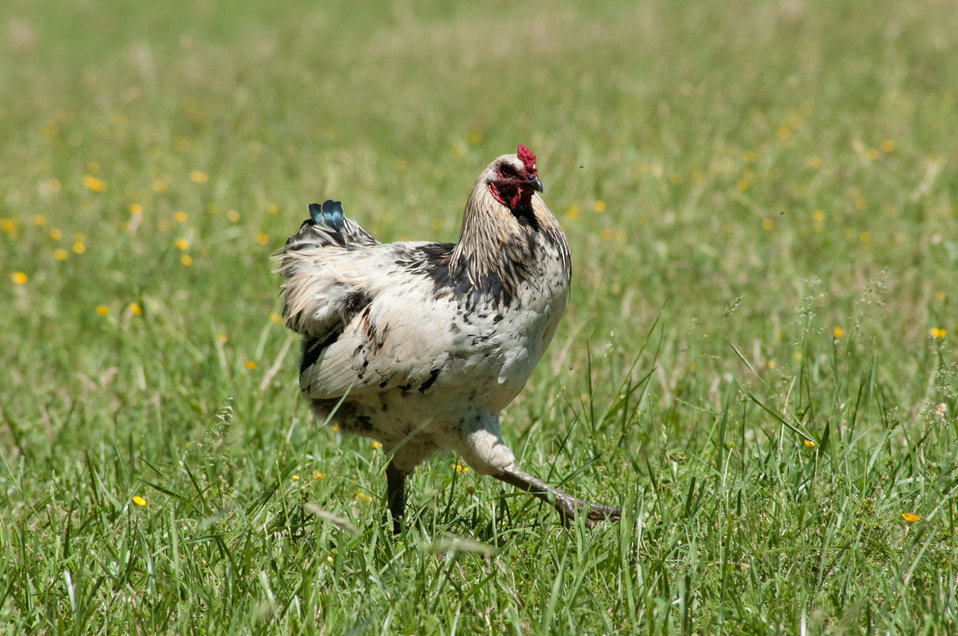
Chickens freely walkabout the lawns and pastures at the Tuckahoe Plantation, in Goochland County, VA, on Thursday, May 5, 2011. Where they graze on the grass they also leave nutrient rich manure to revitalize the soil, enhancing regrowth. The plantation was the boyhood home of President Thomas Jefferson from 1745 until 1752, today it is a working farm with cattle, sheep, chickens and rabbits supplying meats to Fall Line Farms a local food hub. Fall Line Farms offers a wide variety of household food staples and specialty items on an ever changing inventory of fruits, vegetables, meats, soaps, eggs, cheeses, flowers, honey, pastas, sauces, syrups, baked goods, mushrooms, flour and grains. Suppliers post what they have on a Lulus Local Food online listing and customers make their selection. Every Thursday, suppliers team up to deliver customized orders to, one of several pick-up points, designated by the customer in or around the Richmond, VA area.